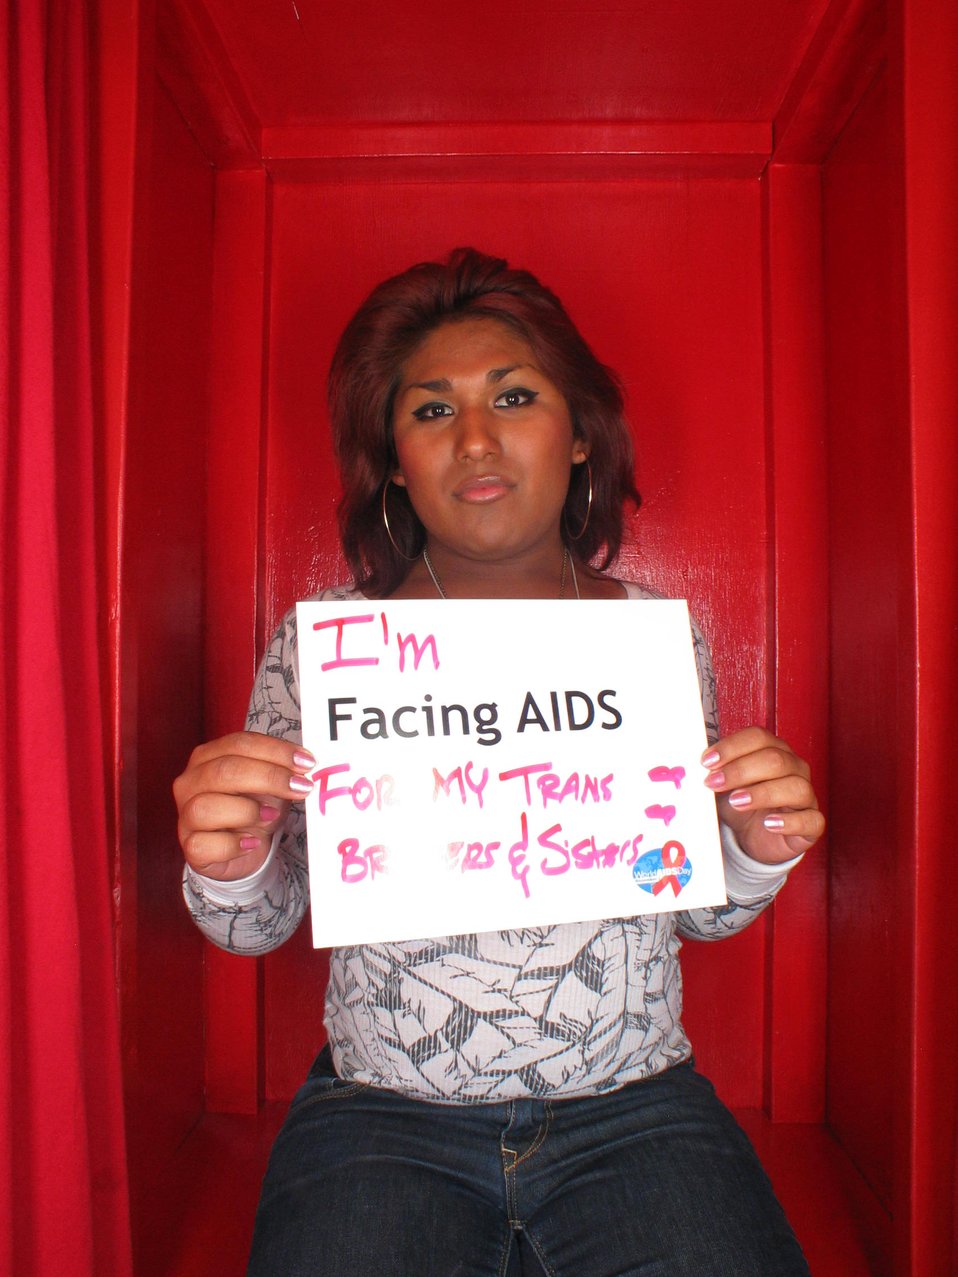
I'm Facing AIDS for my trans brothers and sisters.